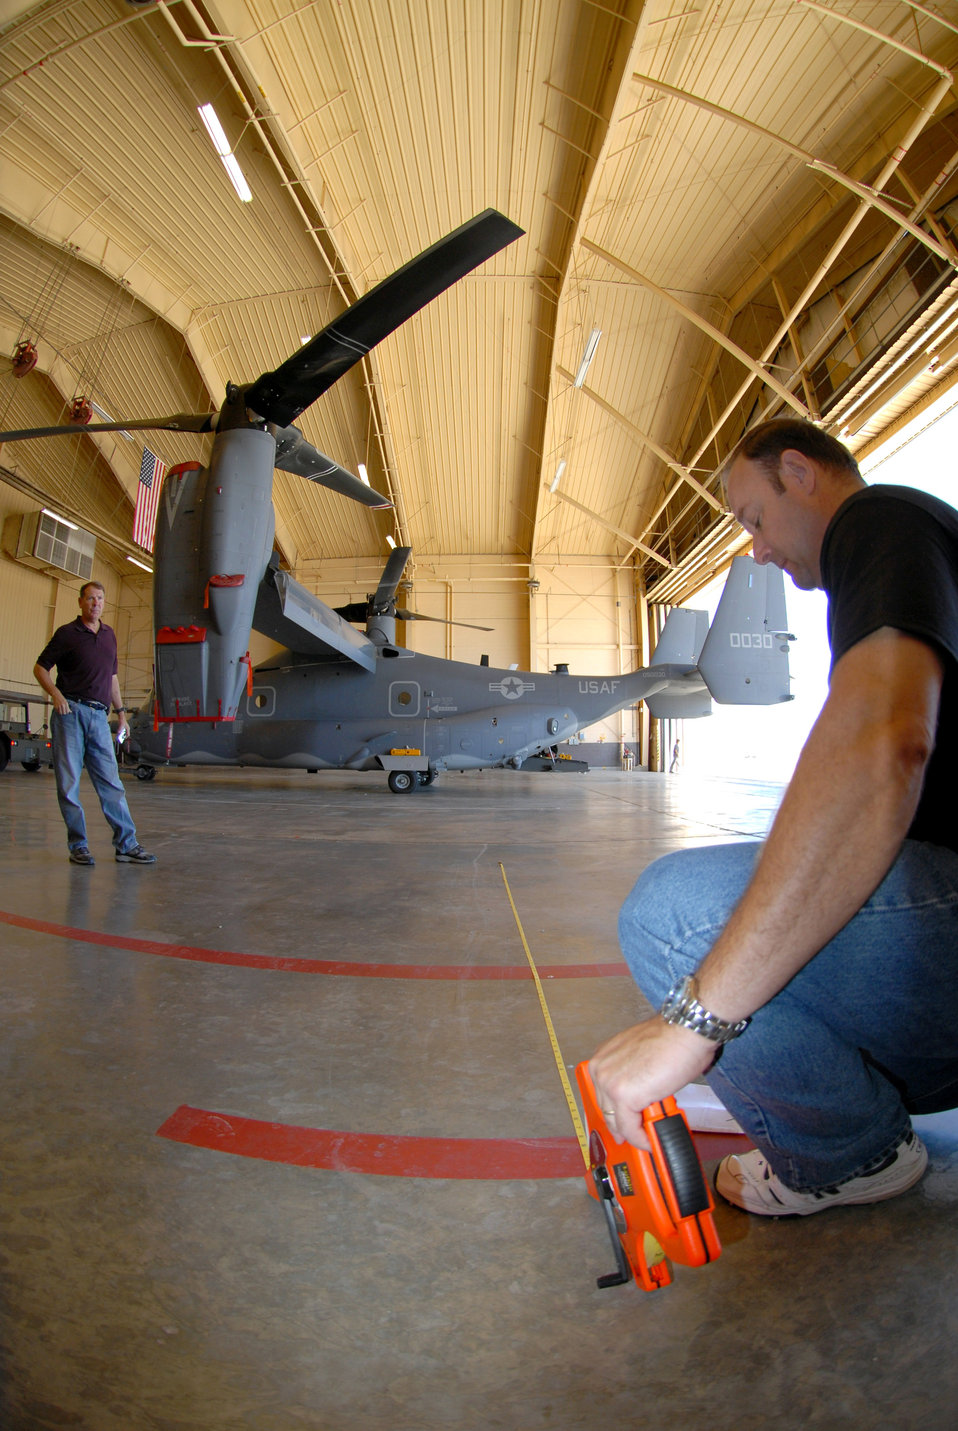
'Fit' to fight

David Lee, left, and Todd Richardson take measurements in a hangar during tests to determine the suitability of the base's hangars to support the CV-22 Osprey Sept. 25 at Cannon Air Force Base, N.M. The men, who provide contract support for the CV-22 program, work for the Boeing Corp. at Fort Walton Beach, Fla. Cannon AFB will be transferred from Air Combat Command to Air Force Special Operations Command Oct. 1. CV-22s are among the special operations aircraft to be assigned to the 27th Special Operations Wing at Cannon AFB. The wing, formerly designated the 27th Fighter Wing, operated F-16 Fighting Falcons at the base from 1995 to 2007.